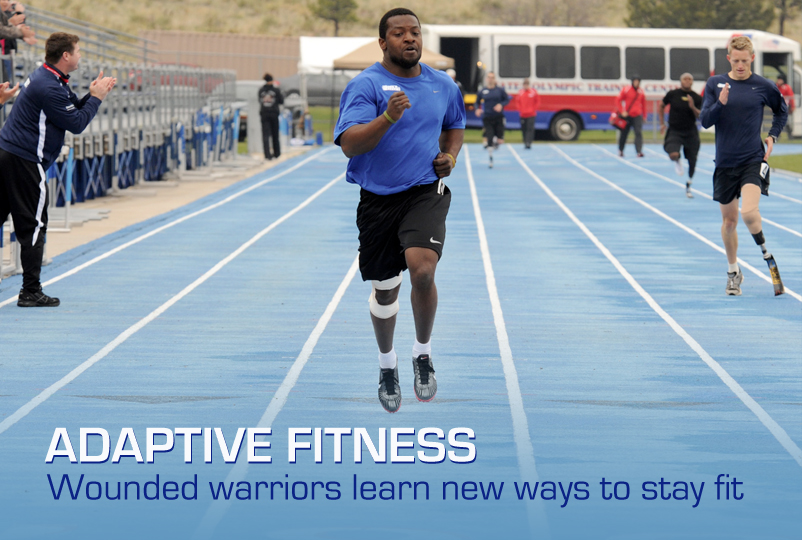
Adaptive Fitness